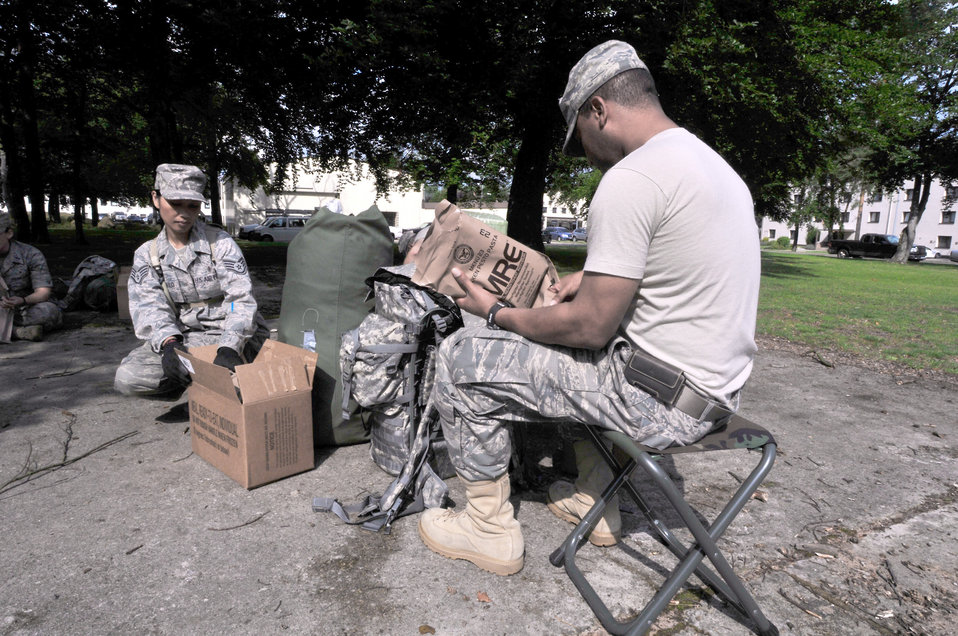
Ramstein AB medics

Medical technicians from the 86th Medical Group participating in a week of mobile aeromedical staging facility training take a few minutes for a Meal, Ready to Eat lunch Aug. 2, 2010, at Ramstein Air Base, Germany.